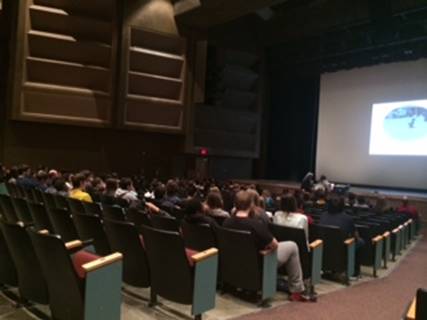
Shattering the Myths in Alaska

Students Against Destructive Decisions (SADD)
presented an assembly with guest speaker Amy Bollaert, Coordinator of the Fairbanks Prevention Coalition, as part of SADD's 'Signature Events' program in Fairbanks, Alaska